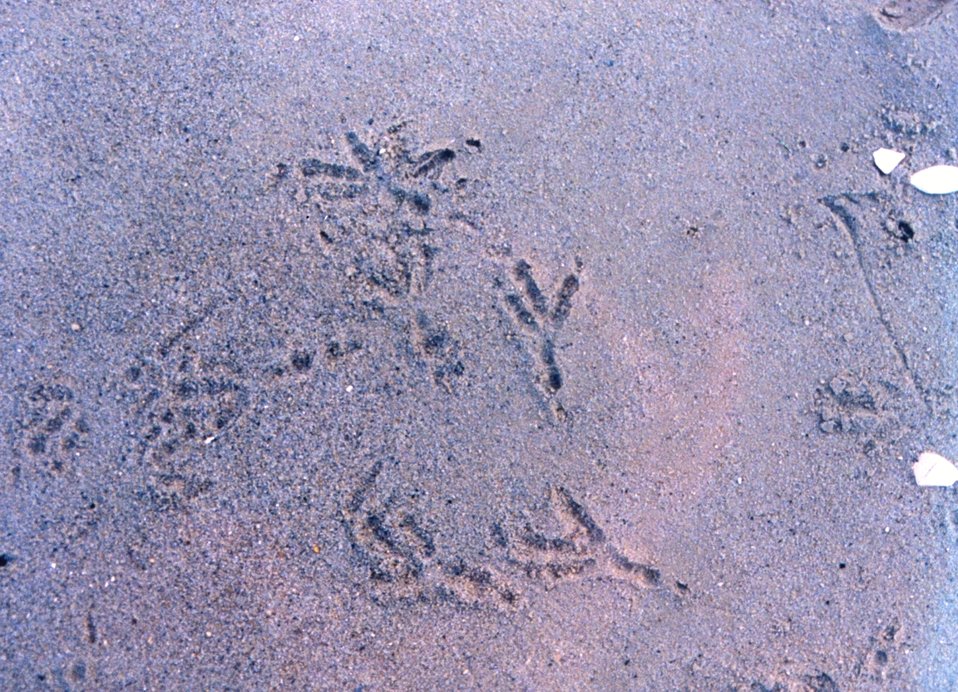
Crow footprints in the sand.